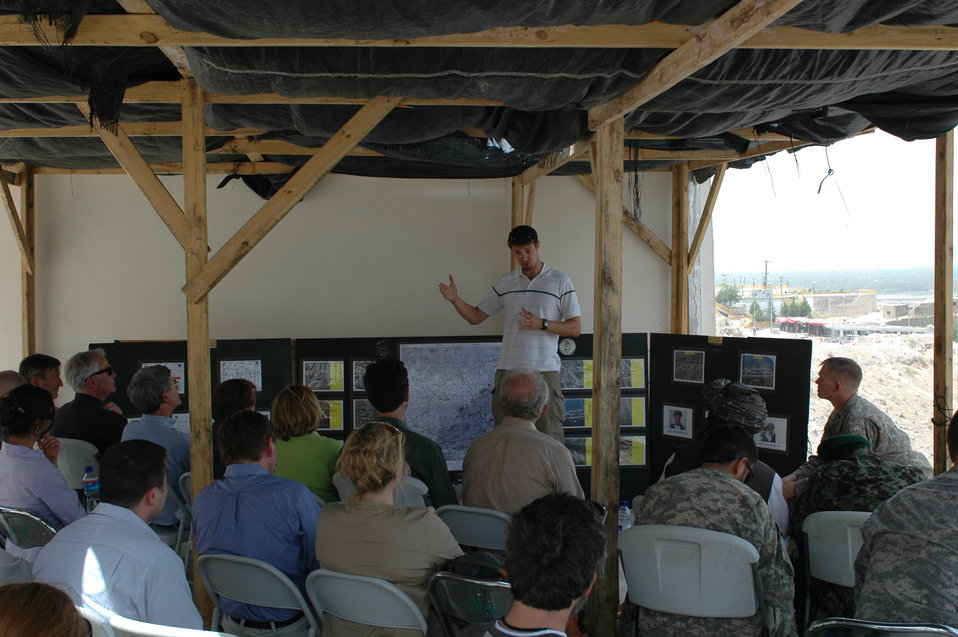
CODEL Berman